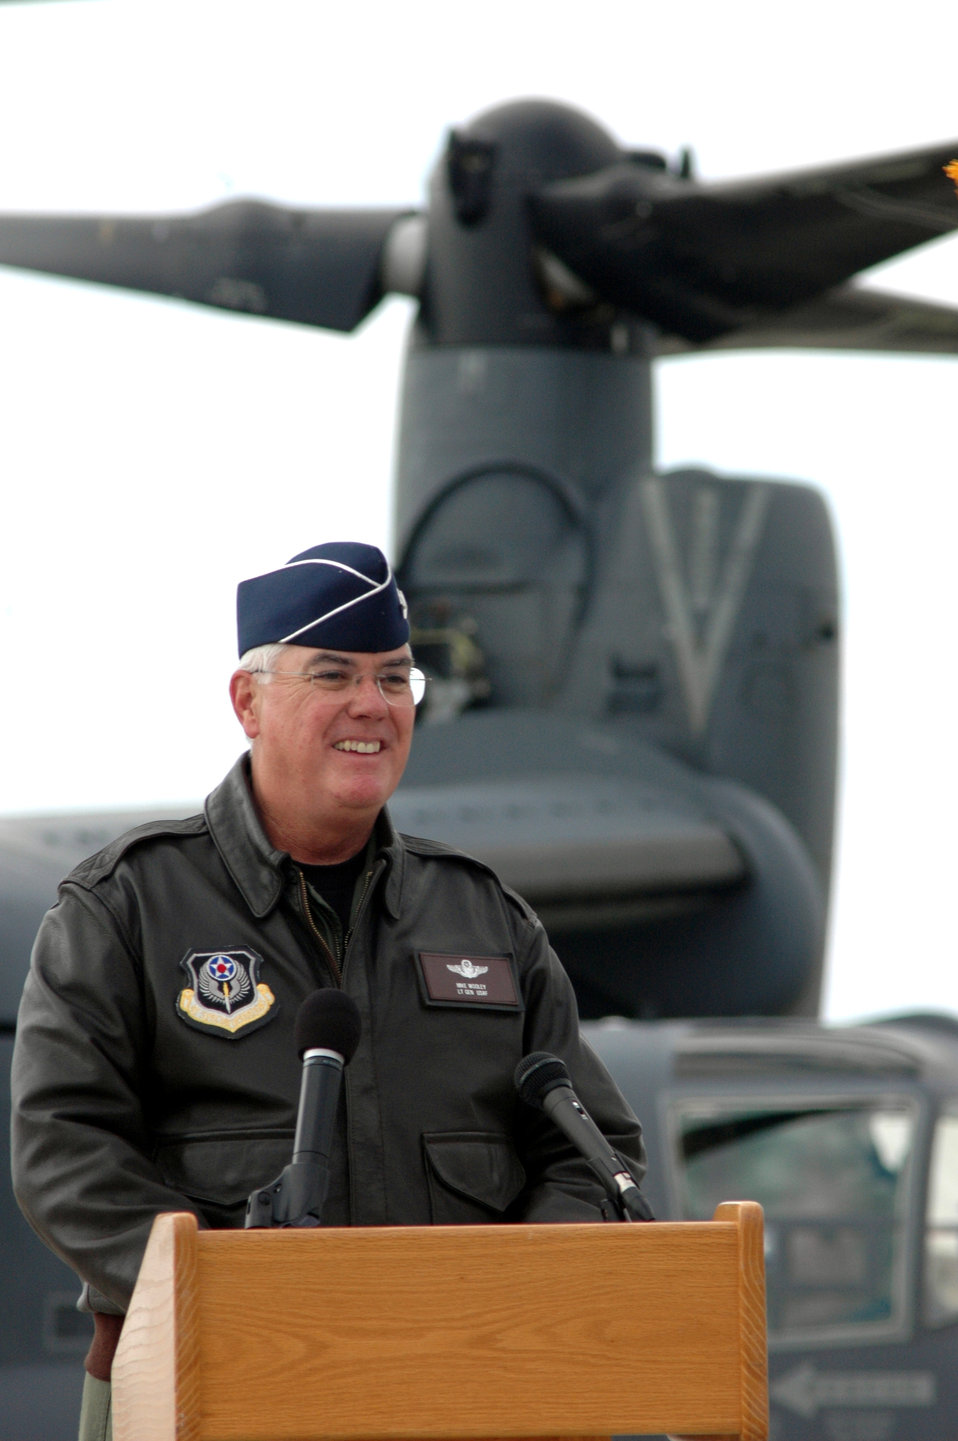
Heritage to horizons

Lt. Gen. Michael W. Wooley, commander of Air Force Special Operations Command, shows his enthusiasm after piloting a CV-22 Osprey to the command's Air Force 60th Anniversary commemoration at Hurlburt Field, Fla., Nov. 16.